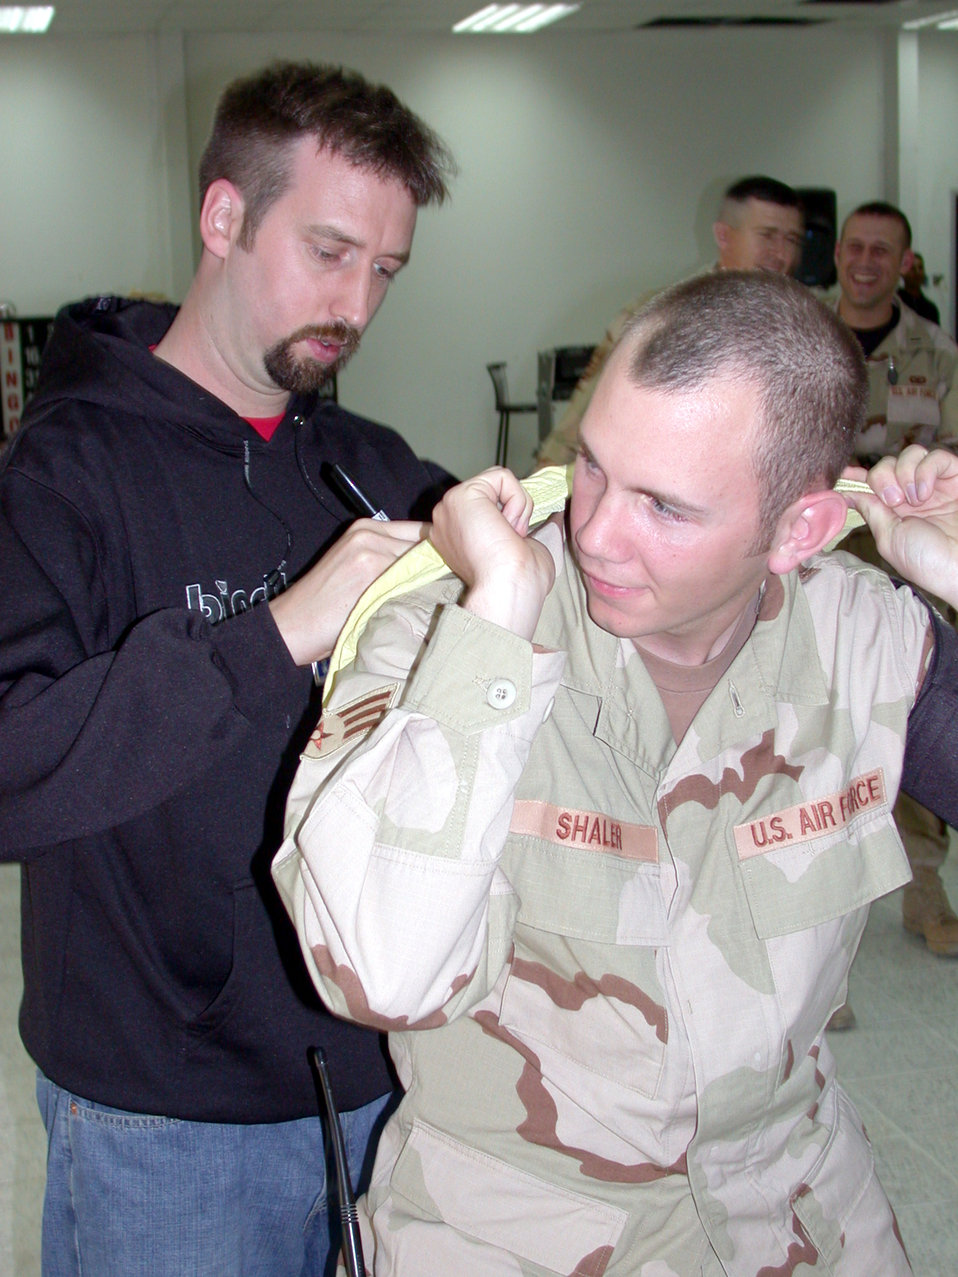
Sign my shorts

SOUTHWEST ASIA -- Senior Airman Jason Shaler gets a pair of his shorts signed by comedian Tom Green during a visit at a forward-deployed location Jan. 13. Mr. Green is traveling to several bases in Southwest Asia as part of a United Service Organizations-sponsored tour. Airman Shaler is assigned to the 386th Expeditionary Security Forces Squadron.